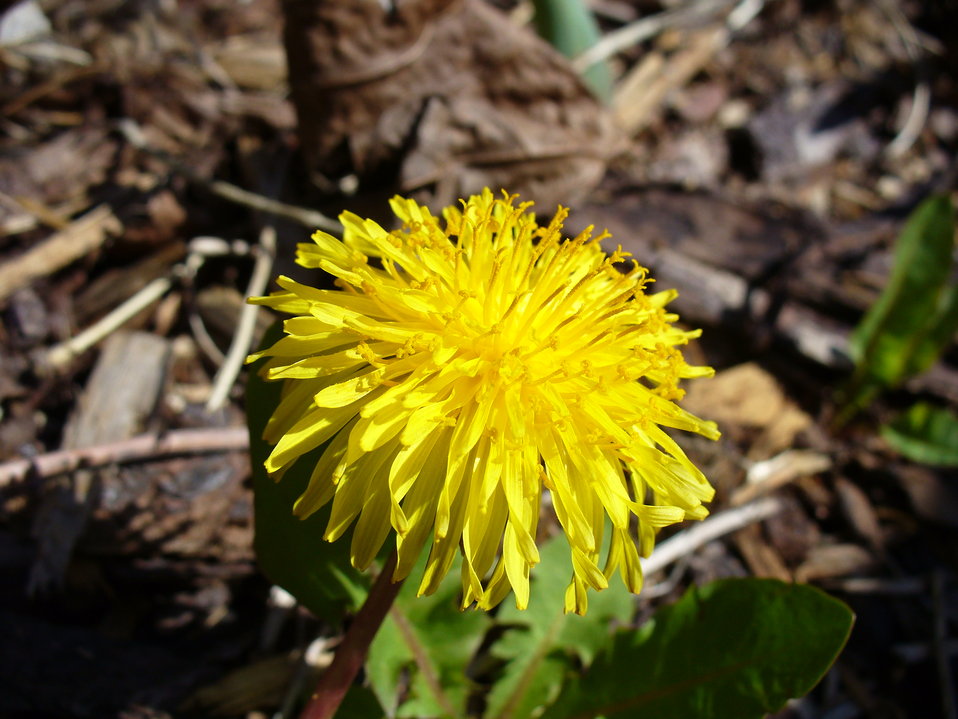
I am the originator of this photo. I hold the copyright. I release it to the public domain. This photo depicts a flower.